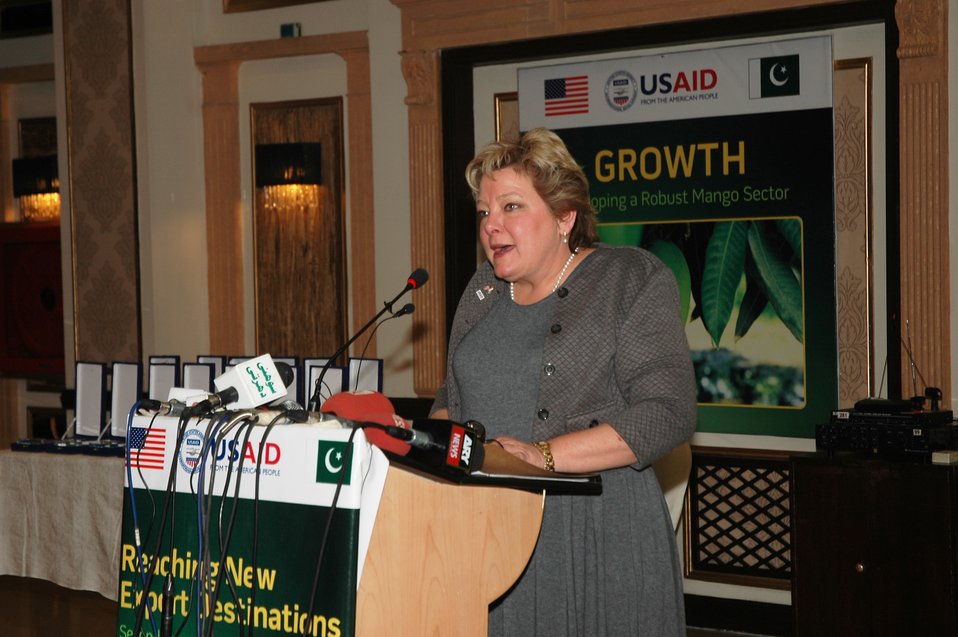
Reaching New Export Destinations

USAID Deputy Mission Director Karen Freeman addresses the conference '- I am proud that the U.S. Government plays the role of a facilitator and a catalyst in the process. However, we can only succeed if you, the leaders of the mango sector that I see gathered here today, embrace the innovations and opportunities for the sector growth.'